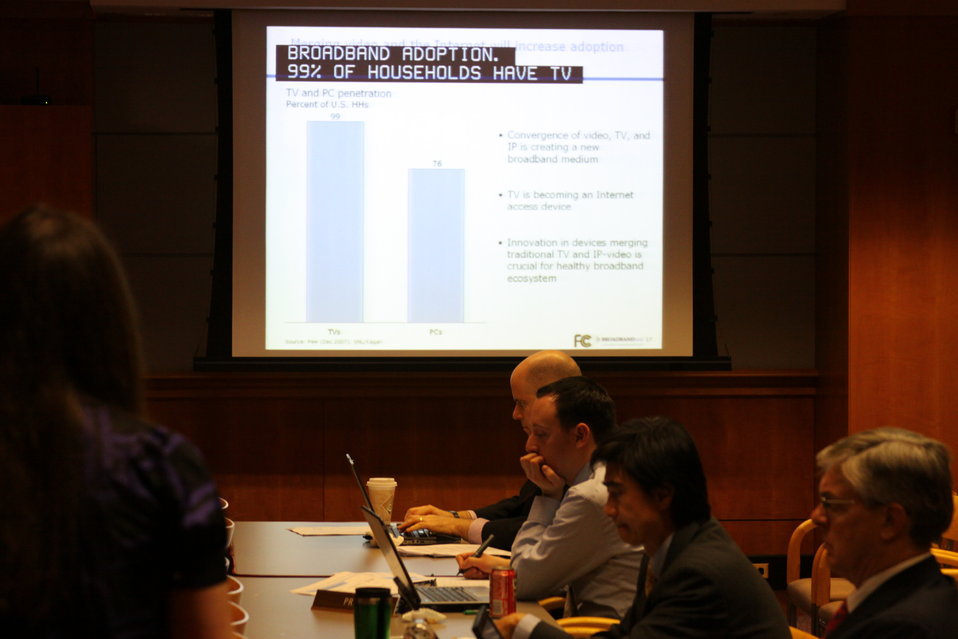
November Open Meeting